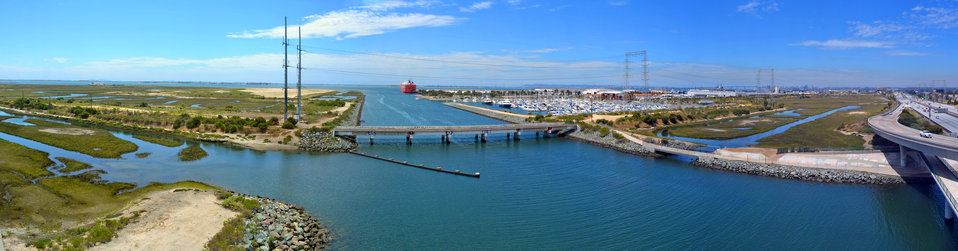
Sweetwater River Flood Control Channel

The Sweetwater River divides two portions of the Sweetwater Marsh Unit of the San Diego Bay NWR